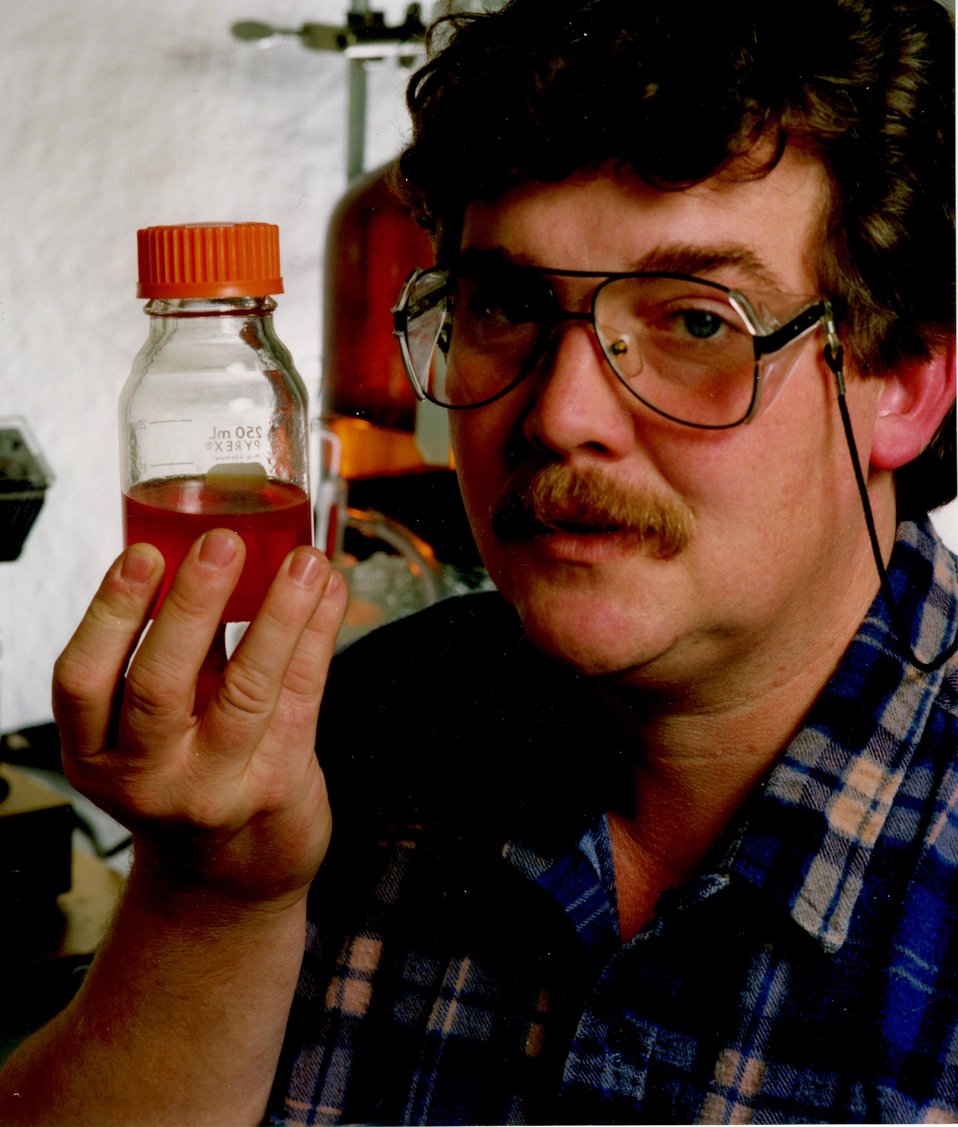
RESEARCHER HOLDING BOTTLE OF LEVULINIC ACID (4-OXO-PENTANOIC ACID) CREATED FROM PAPER MILL SLUDGE.

USING RENEWABLE FEEDSTOCKS, SPECIFICALLY PAPER MILL SLUDGE, BIOFINE INC. OF SOUTH GLENS FALLS, NY PRODUCES LEVULINIC ACID, A CLEAN INTERMEDIARY CHEMICAL THAT CAN BE USED TO CREATE A NUMBER OF OTHER CHEMICALS. UNDER A COOPERATIVE RESEARCH AND DEVELOPMENT AGREEMENT (CRADA), PNNL IS DEVELOPING A PROCESS TO TURN LEVULINIC ACID INTO AUTOMOTIVE FUEL KNOWN AS METF (METHYLTETRAHYDROFURAN).